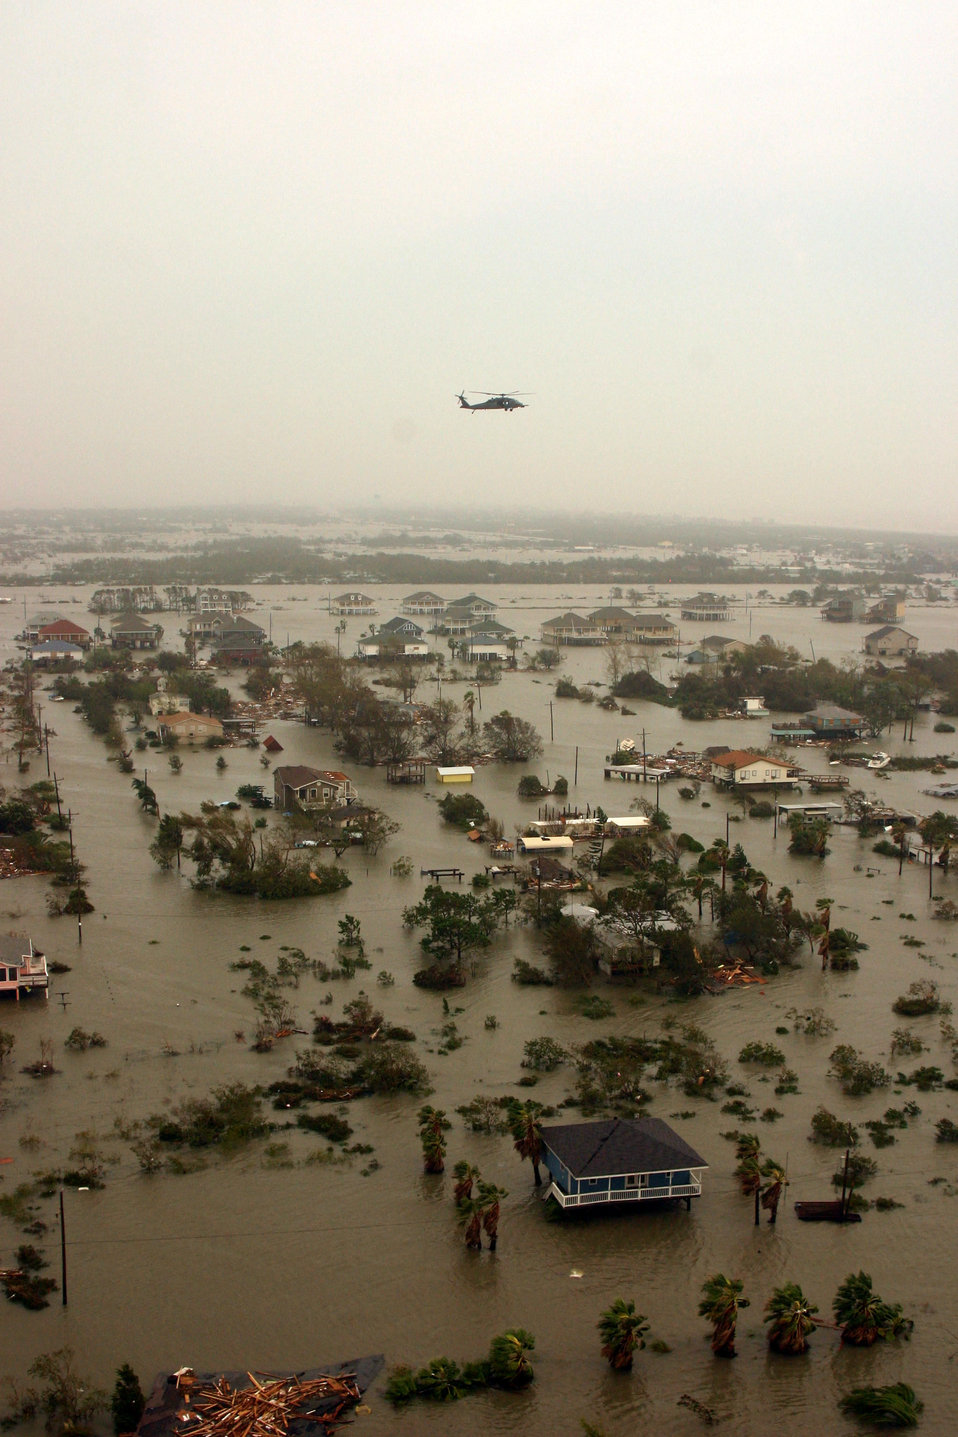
Helicopter aircrews rescue hurricane victims

A Joint Task Force-129 crew on board an HH-60G Pave Hawk flies over the Galveston area Sept. 13 on the Gulf Coast of Texas. The JTF-129 crews rescued 48 people and pets stranded in the Galveston area.